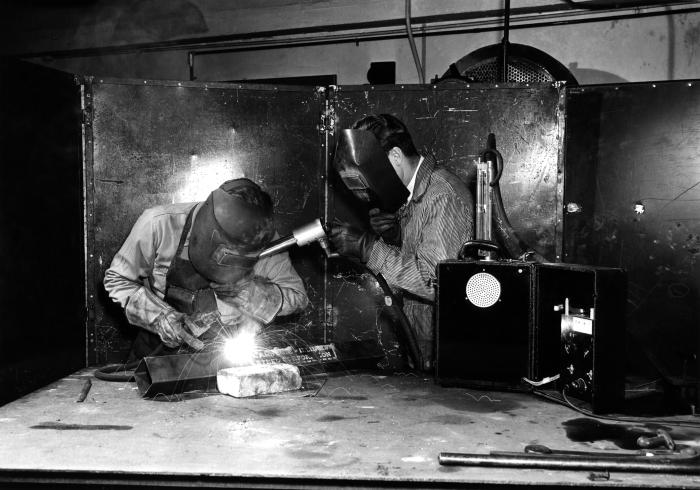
This 1946 historical photograph was provided by the Center for Disease Control's (CDC), National Institute for Occupational Safety and Health (NIOSH). The photo depicted an industrial hygienist who was using an air sampling flowmeter in order to sample the air in a welder's 'breathing zone' around his immediate work site. The chemicals that facilitate the welding process, as well as the metallic materials themselves when superheated while being welded, produce a number of noxious gasses, all of which can readily be inhaled by the welder, or nearby workers, and therefore, these people need be protected from such fumes. Not only does a welder need eye protection from the extremely bright light emitted from the superheated metals, but the respiratory system needs protection as well with the correct type of filtration mask.